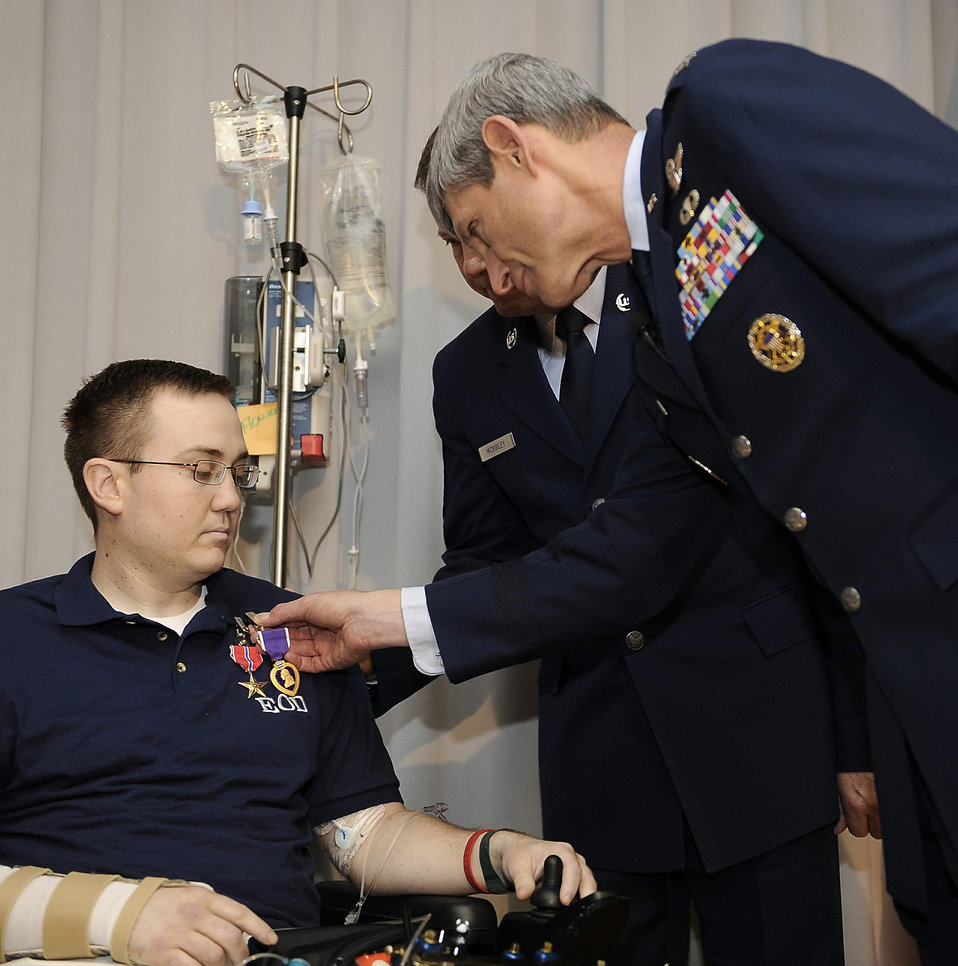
Wounded EOD technician has big plans

Air Force Chief of Staff Gen. Norton Schwartz thanks Staff Sgt. David Flowers for service to the nation June 22 at Walter Reed Army Hospital in Washington, D.C. Sergeant Flowers was awarded a Bronze Star, a Purple Heart and a Combat Action Medal during a ceremony at the hospital.